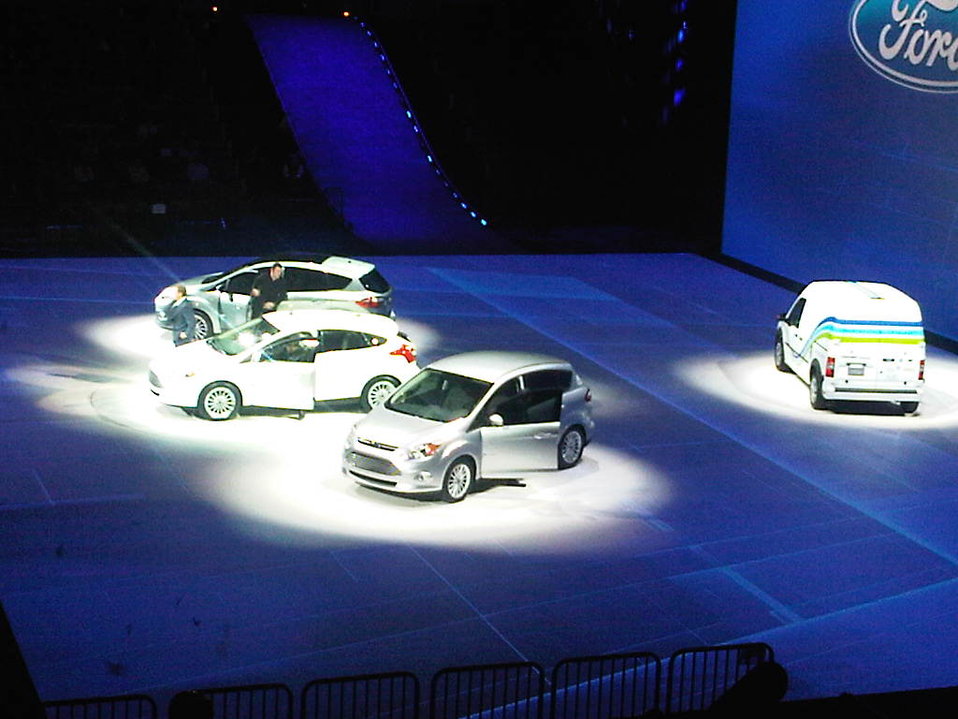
The 2011 Detroit Auto Show